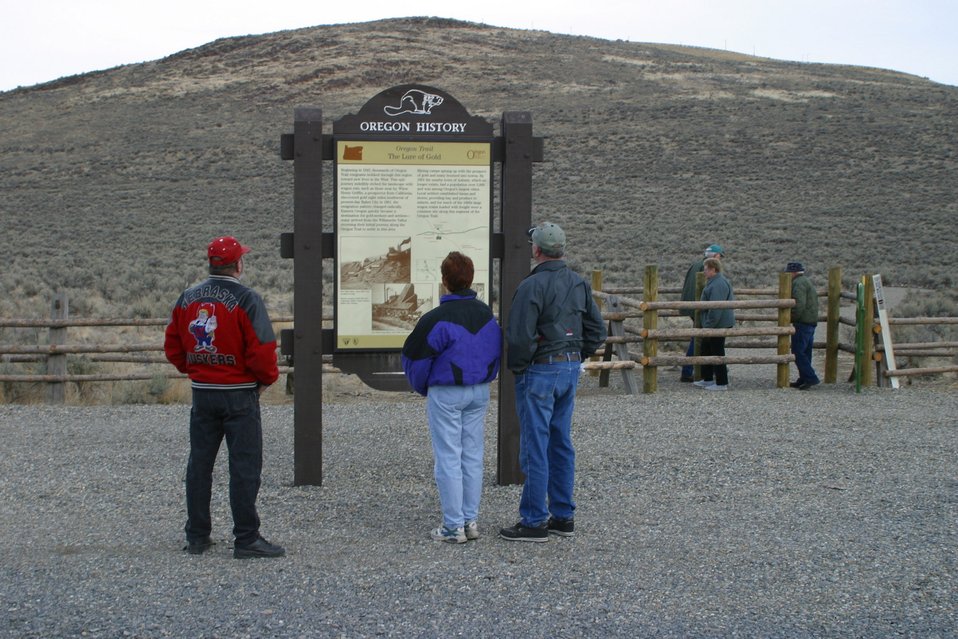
Visitors can read about and see for themselves the Oregon Trail just below the National Historic Oregon Trail Interpretive Center.